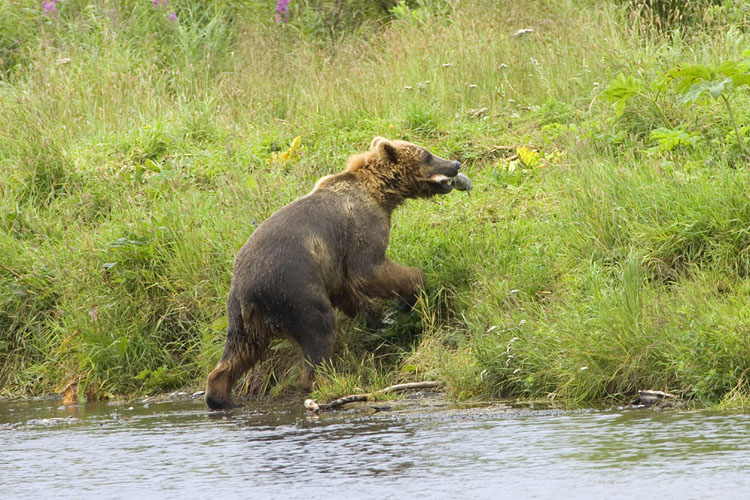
Kodiak Brown Bear

Kodiak National Wildlife Refuge- Wildlife